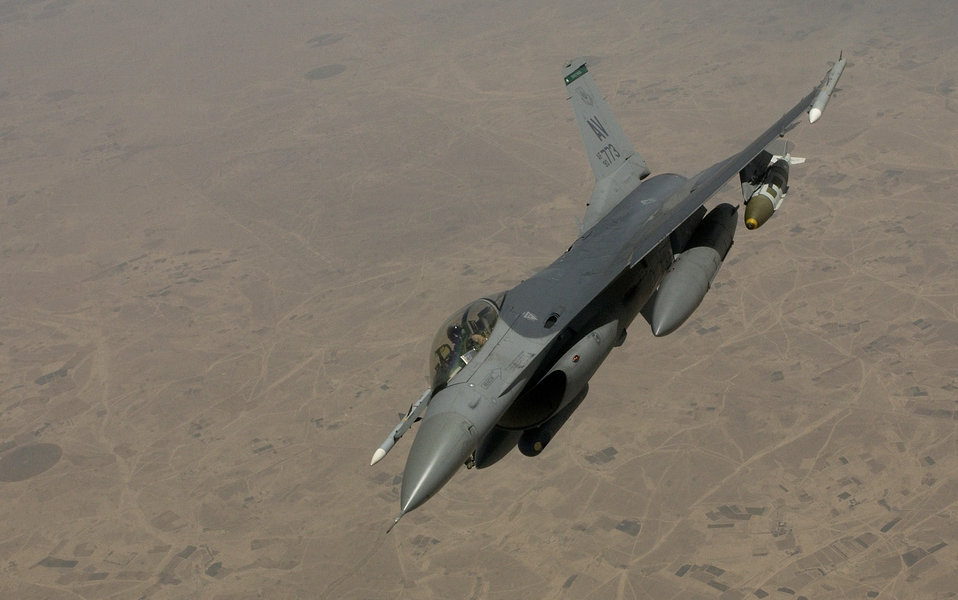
One billion pounds of fuel

SOUTHWEST ASIA -- An F-16 Fighting Falcon from the 555th Fighter Squadron at Aviano Air Base, Italy, banks away from a KC-135 Stratotanker on April 21 following an aerial refueling. The F-16 received the 1 billionth pound of fuel distributed from Combined Forces Air Component Command refuelers since Jan. 30, 2003.